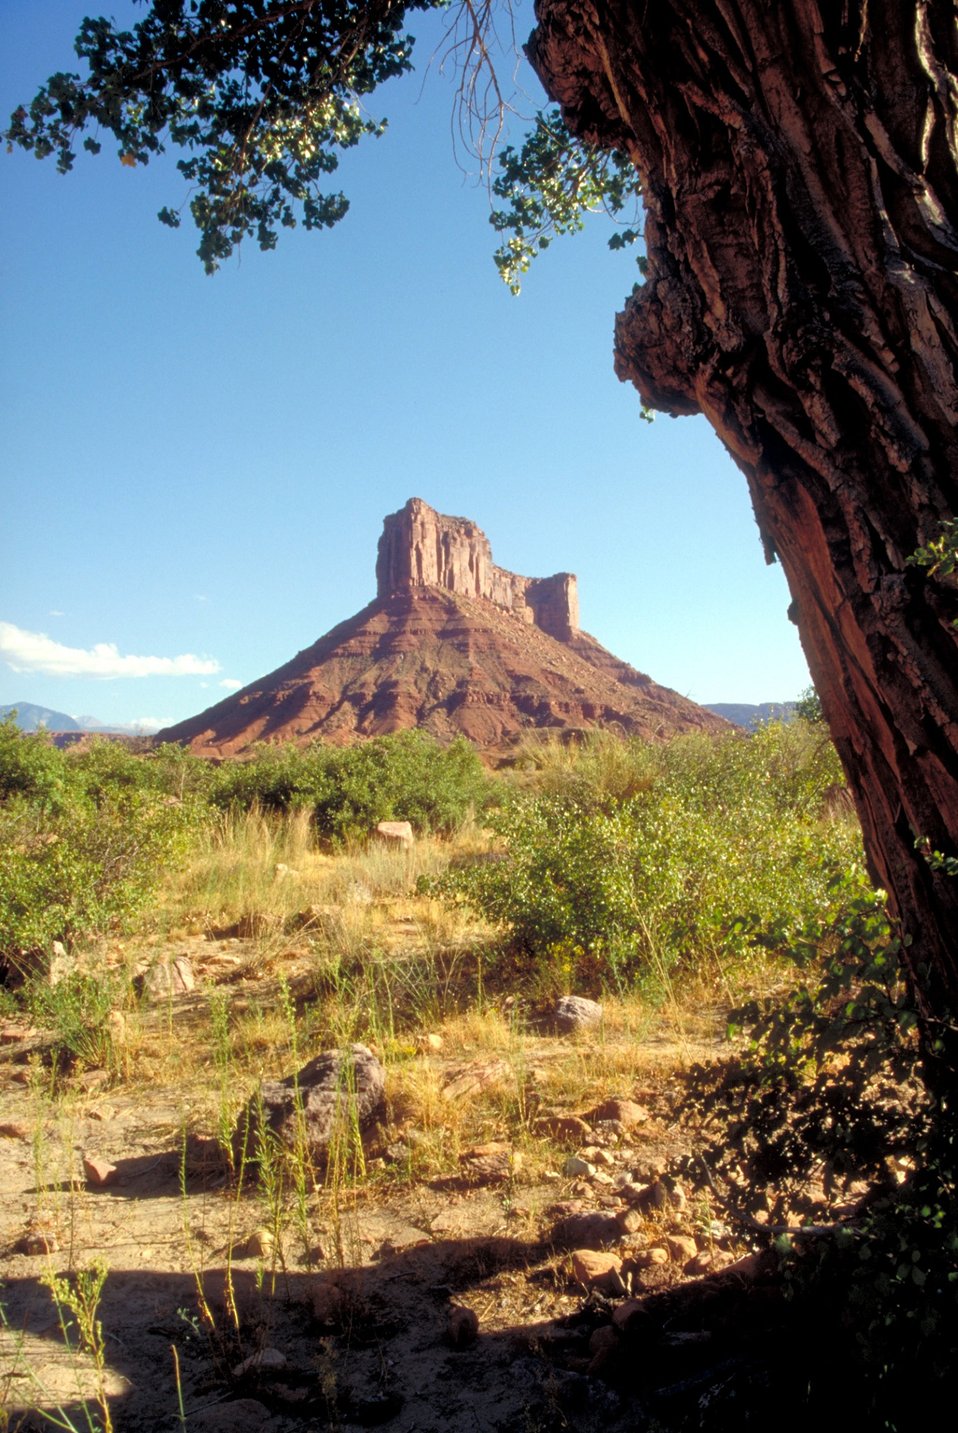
Butte along the Colorado Riverway, Highway 128 near Moab, Utah.